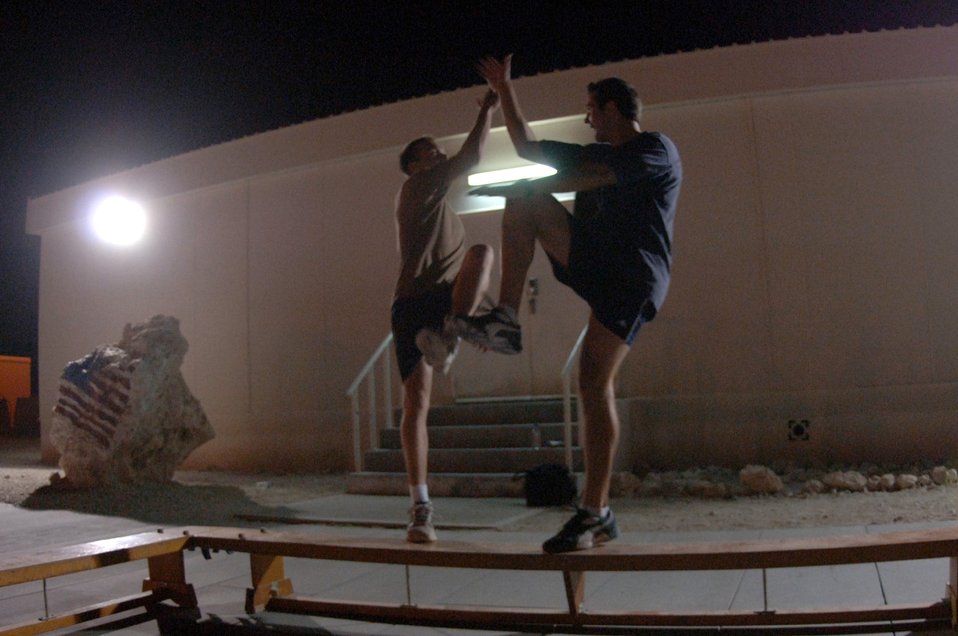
Operation Iraqi Freedom

SOUTHWEST ASIA (AFPN) -- Two Royal Air Force Airmen give a